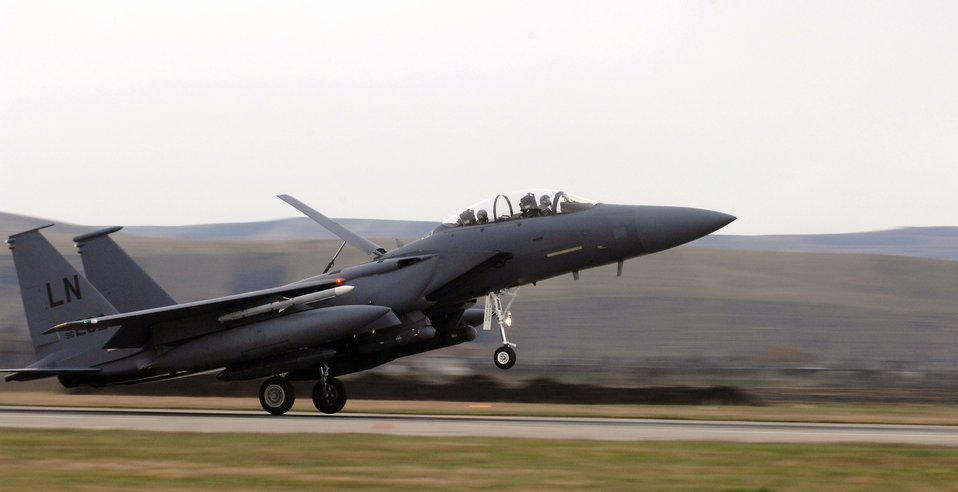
Airmen augment Romanian security for NATO summit

An F-15 Eagle from the 48th Fighter Wing at Royal Air Force Lakenheath, England, arrives March 25 at Campia Turzii, a Romanian airfield near Cluj, to support the NATO Summit to be held April 2 to 4 in Bucharest, Romanian. President George W. Bush will be among the world leaders attending the summit.